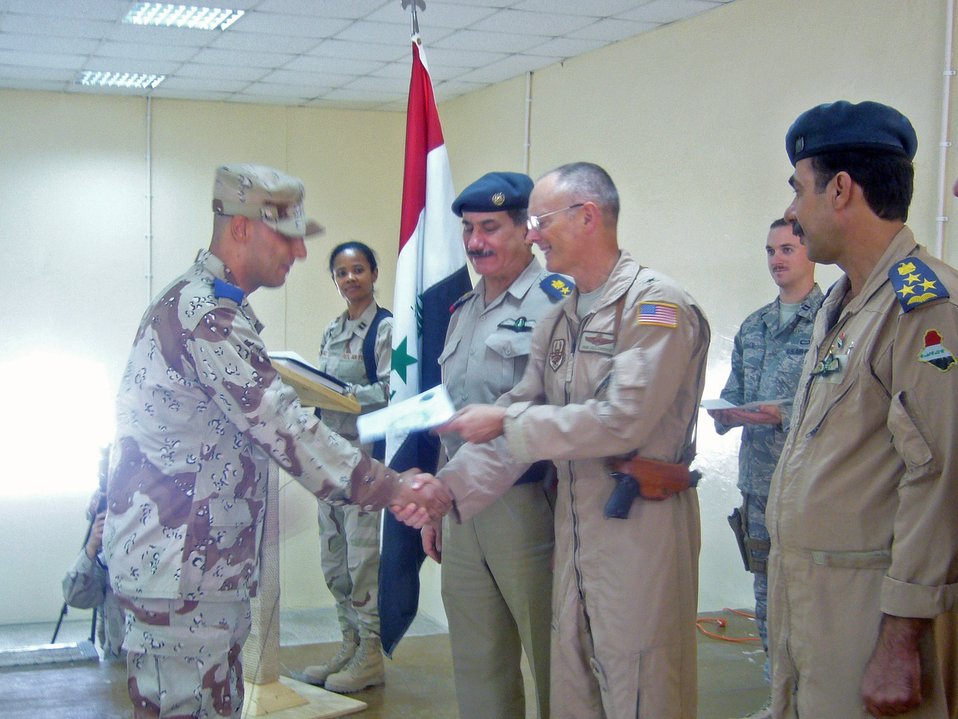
Symbol of tyranny replaced: victory for Iraq air force

Brig. Gen. Robert R. Allardice (center) takes part in a commissioning ceremony held Sept. 12 following the dedication of the new Iraqi Air Force Training School at Taji Air Base, Iraq. Also attending are Lt. Gen. Kamal Brazanjay (left), commander of the Iraqi Air Force and (right) the commandant of the Iraqi Air Force Training School. General Allardice is the commander of the Coalition Air Force Transition Team.